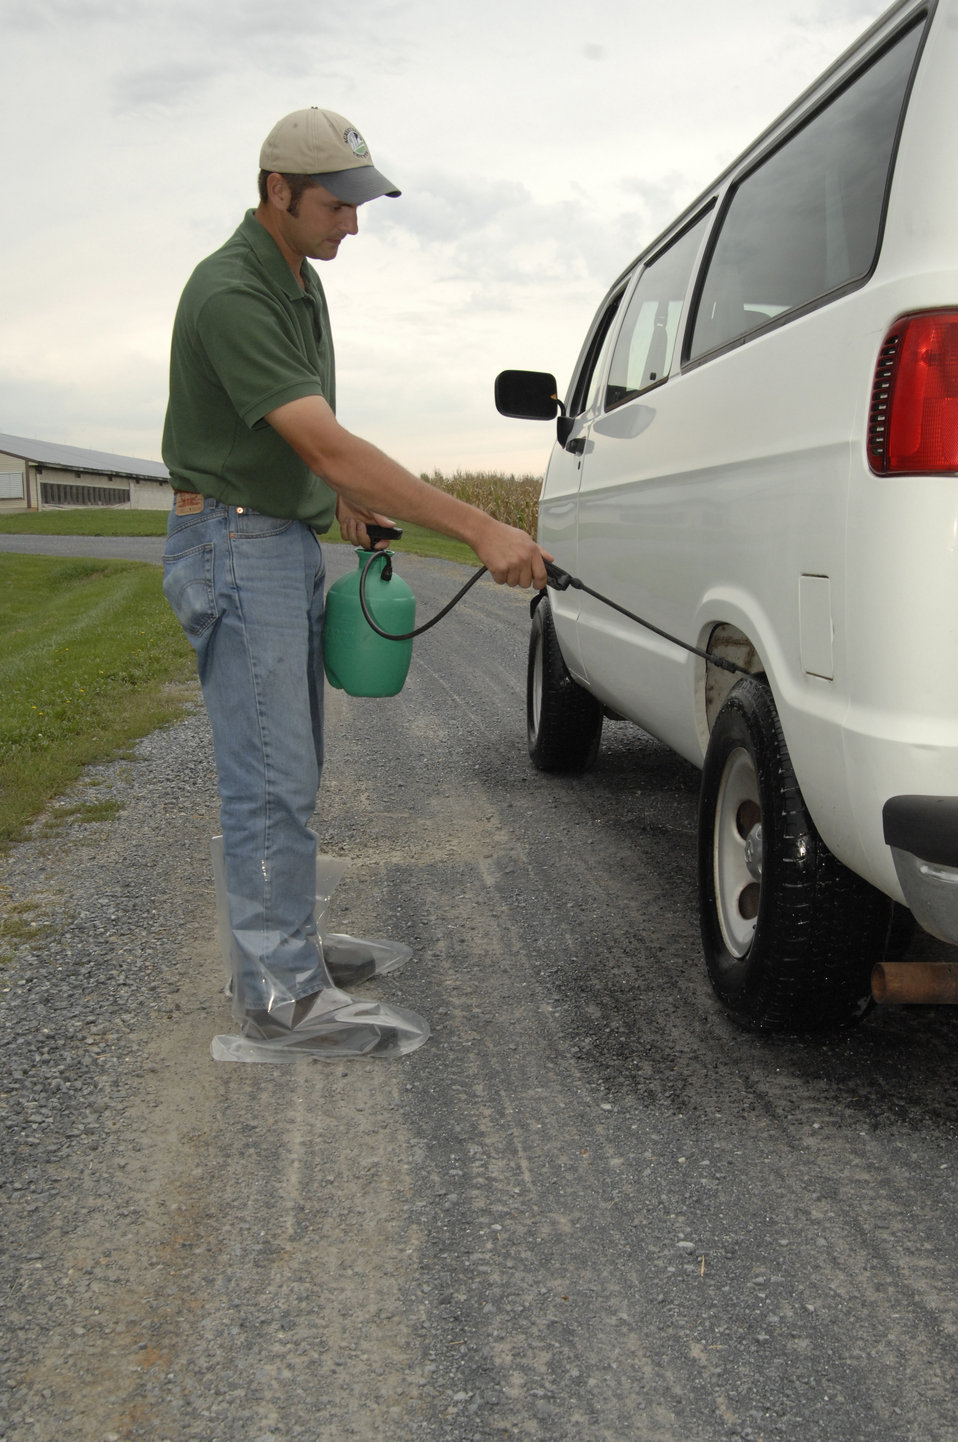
A U.S. Department of Agriculture (USDA) inspector takes necessary precautions to prevent the spread of any diseases between poultry farms in Rockingham County, Virginia on September 8, 2008.